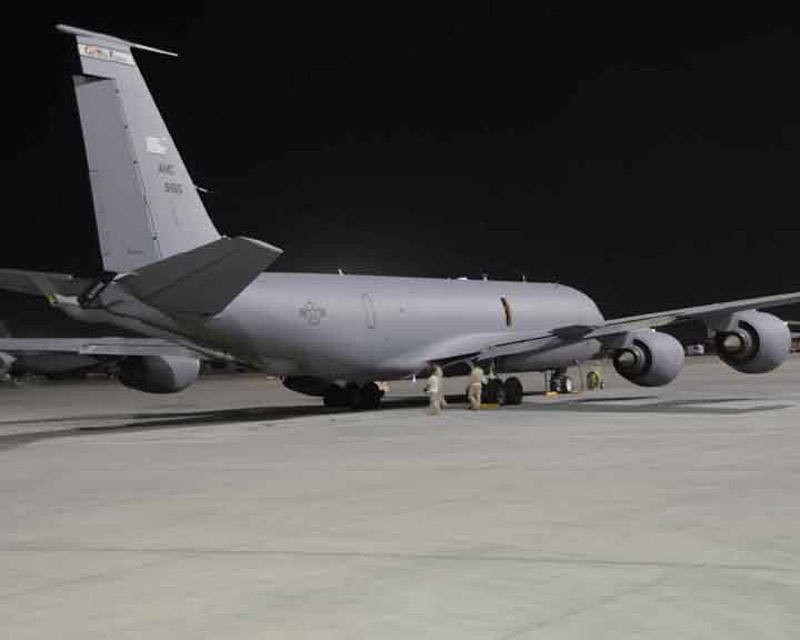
Nocturnal workers

Airmen with the 379th Expeditionary Security Forces Squadron keep a watchful eye on a KC-135 Stratotanker as night shift maintainers work May 29 in Southwest Asia.